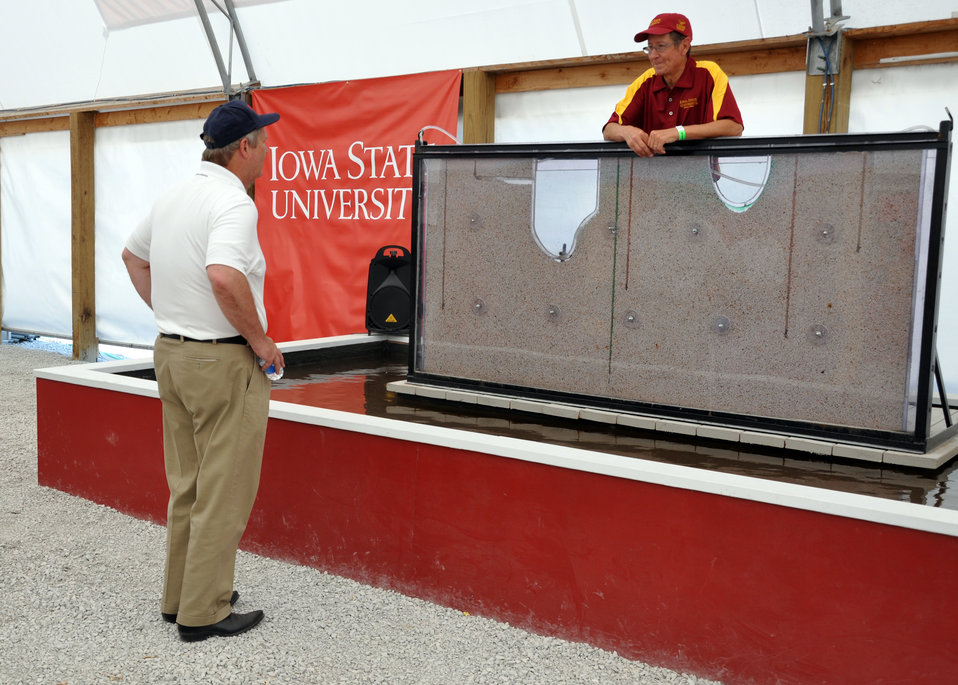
Agriculture Secretary Tom Vilsack views an Iowa State University display that shows how nitrogen and phosphorus leave tile lines during the 2012 Farm Progress Show in Boone, Iowa, on Aug. 30, 2012. Iowa Water Center Director Rick Cruse explains how the display works.